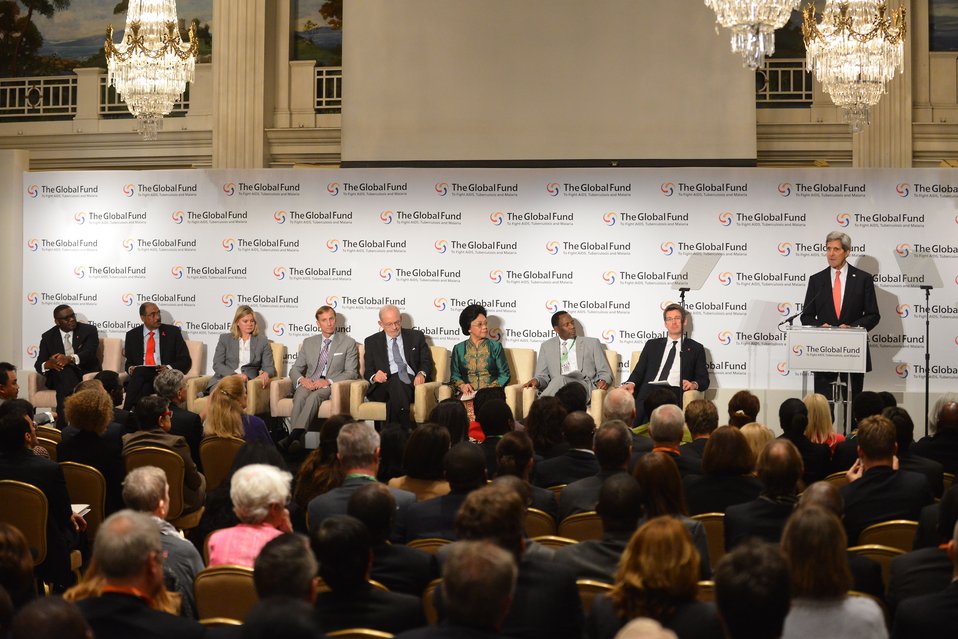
Secretary Kerry Delivers Remarks at the Partnership Symposium of the Global Fund’s Fourth Replenishment Conference

U.S. Secretary of State John Kerry delivers remarks at the Partnership Symposium of the Global Fund’s Fourth Replenishment Conference in Washington, D.C., on December 2, 2013.